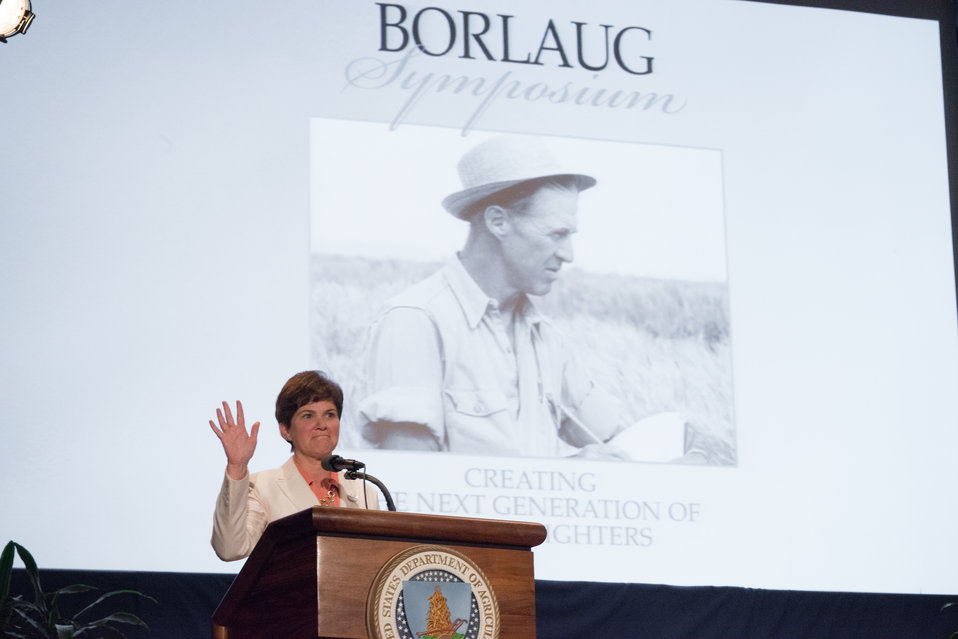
Agriculture Deputy Secretary Krysta Harden is the keynote speaker for the Borlaug Symposium commemorating the late Dr. Norman Borlaug's 100th Birthday in the Jefferson Auditorium of the U.S. Department of Agriculture (USDA) in Washington, D.C. on Tuesday, Mar. 25, 2014. The symposium highlights current efforts addressing global hunger. The symposium panels will feature high school and university students, as well as, scientists and policy advisors at U.S. Agency for International Development (USAID), USDA and Non-Governmental Organizations (NGO). Questions from students and interns are given priority to panelists. Lightening presentations will have leading students and individuals present what they are doing to help achieve Dr. Borlaug’s vision of creating the next generation of hunger fighters. The symposium was planned in partnership with: USAID, Cornell University, Iowa State University, University of Minnesota, The Norman Borlaug Institute for International Agriculture, Texas A and M University, and the World Food Prize.